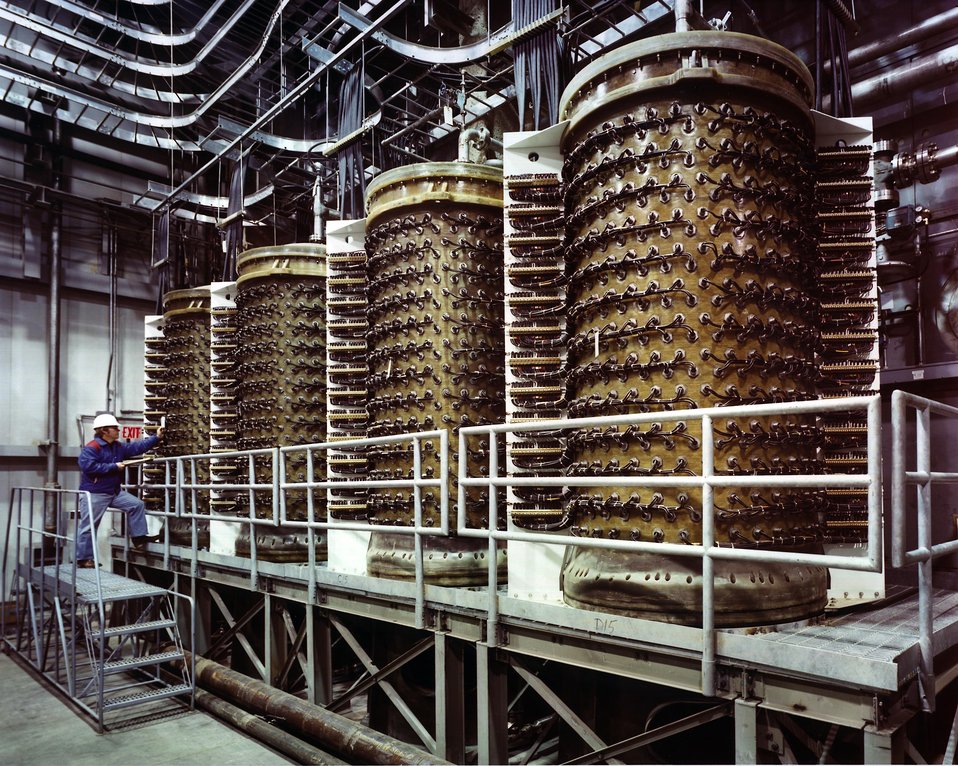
THE RESTRICTIVE LOAD BANK WITH 700 RESISTOR ELEMENTS IN 4 SUP-PORT TANKS.

AUTHORIZED AS A TEST FACILITY TO STUDY MAGNETOHYDRODYNAMICS (MHD) AS A METHOD OF PRODUCING ELECTRICITY, THE C.D.I.F. IS DESIGNED TO TEST ALL MAJOR COMPONENTS AND SUBSYSTEMS RELATED TO THE MHD PROCESS. THE C.D.I.F. WILL BEGIN TESTING AT THE 50 MWT LEVEL BUT WILL LATER EXPAND TO THE 100 MWT LEVEL. THE MHD TESTING BEGAN DECEMBER 3, 1980. PRIMARY COOLING WATER SYSTEM (PCWS) CIRCULATES THROUGH THE TANKS, TRANSFERRING THE HEAT FROM THE TANKS TO THE WATER AND ULTIMATELY TO THE ATMOSPHERE.